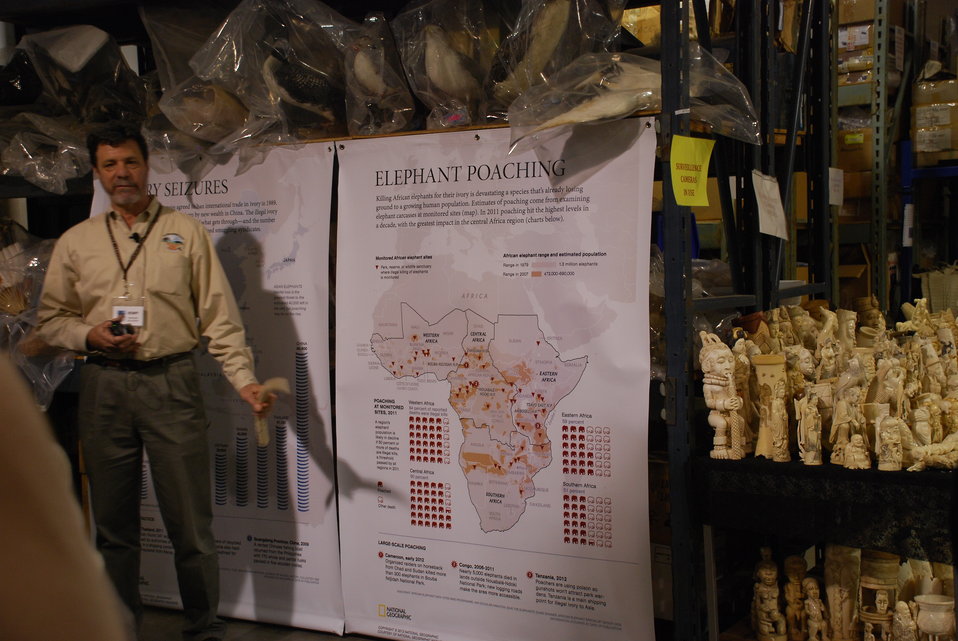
Ivory Crush 2013